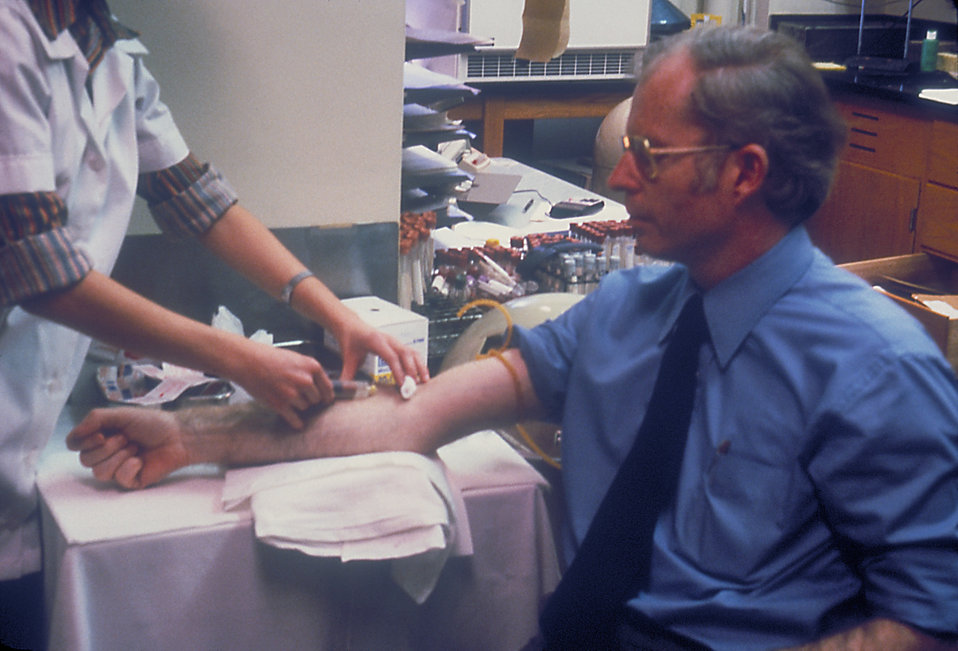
Health worker obtaining blood sample from patient.